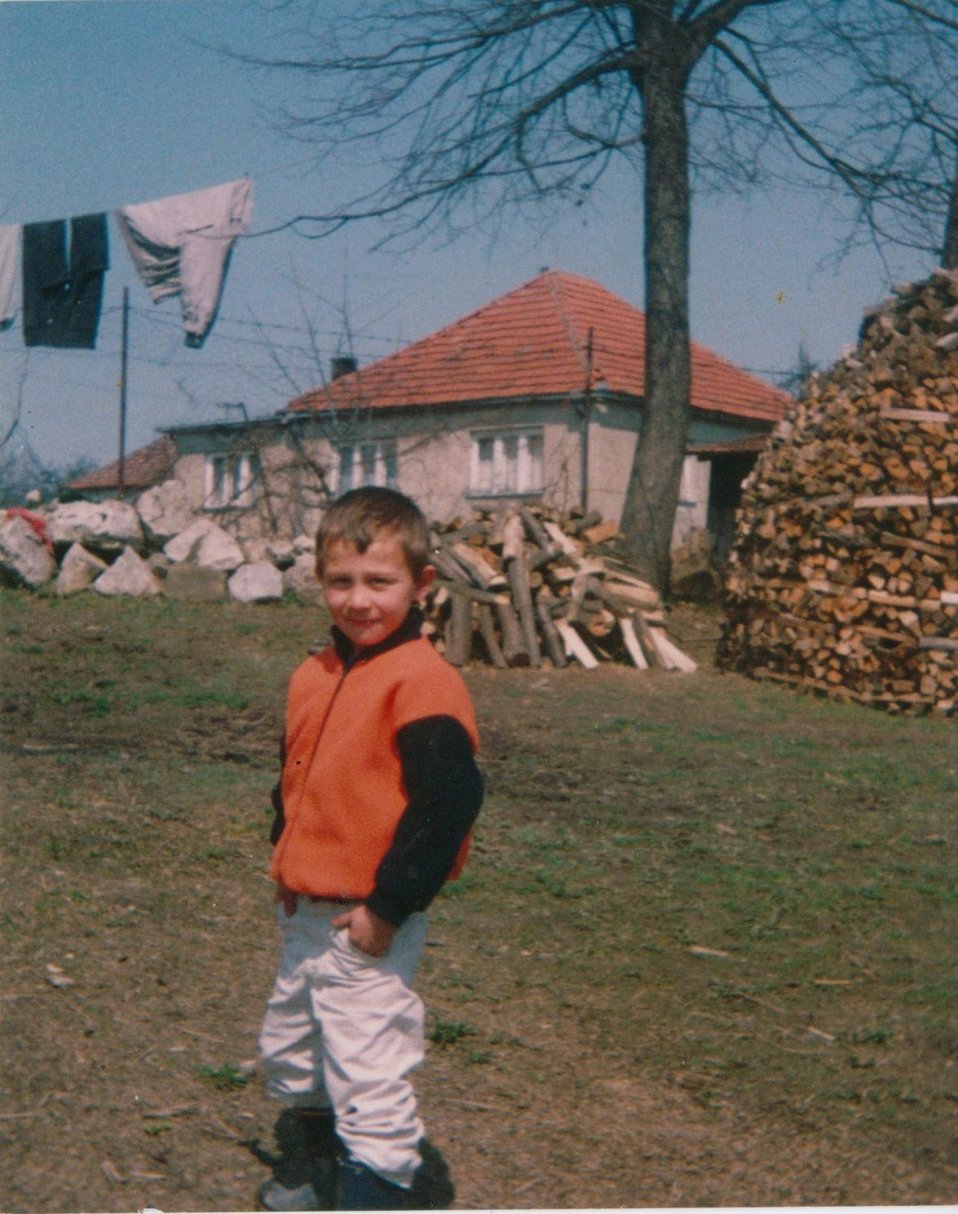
Triumph of survival

Then six-year old Muhamed Mehmedovic lived in Tuzla in 1995 after he and his family escaped the genocide committed against his people.